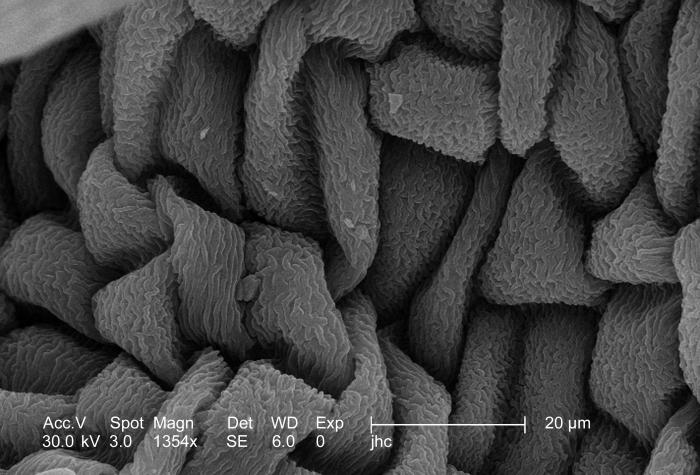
Under a moderately high magnification of 1354x, this scanning electron micrograph (SEM) revealed some of the ultrastructural details seen on the surface of a "crimson clover", Trifolium incarnatum flower petal. This clover was blooming during the month of March on the grounds of the Centers for Disease Control headquarters in Atlanta, Georgia. Being that flower petals are actually modified leaves, the highly textured surface, composed of many cavitations and protuberances, are actually modification of the plant's leaf morphology.